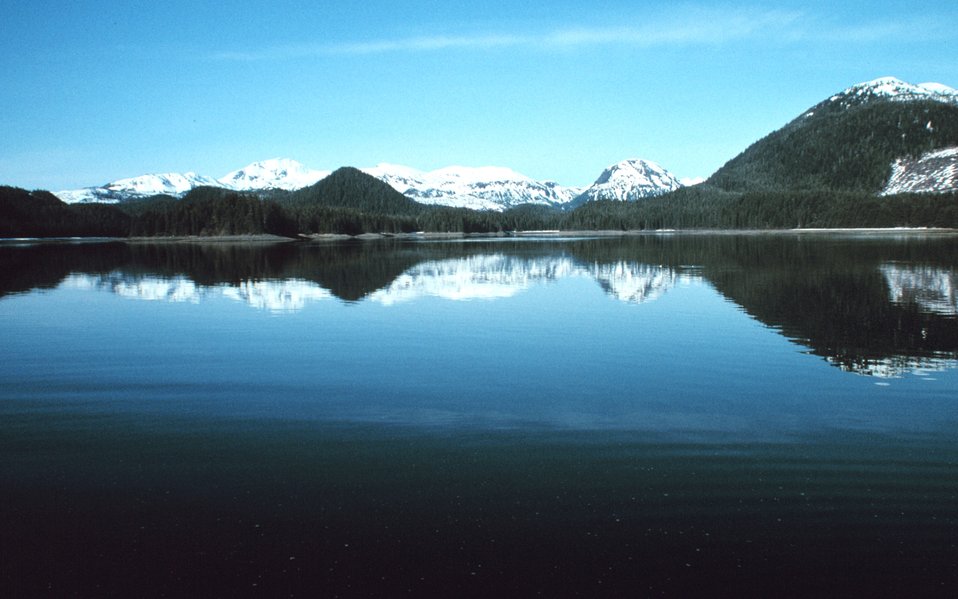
Port Frederick